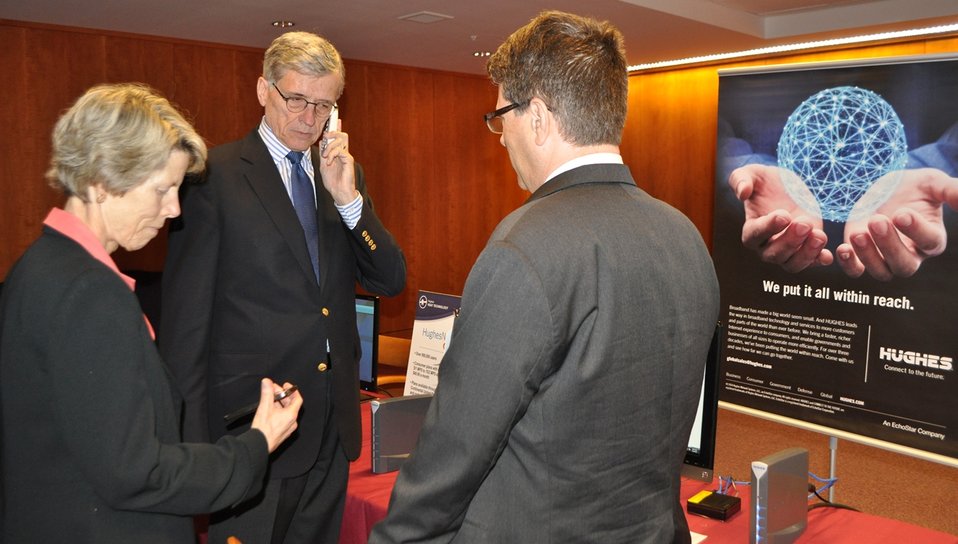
5.14.2014 Satellite Technology Demonstration

Chairman Tom Wheeler at the Satellite Technology Demonstration